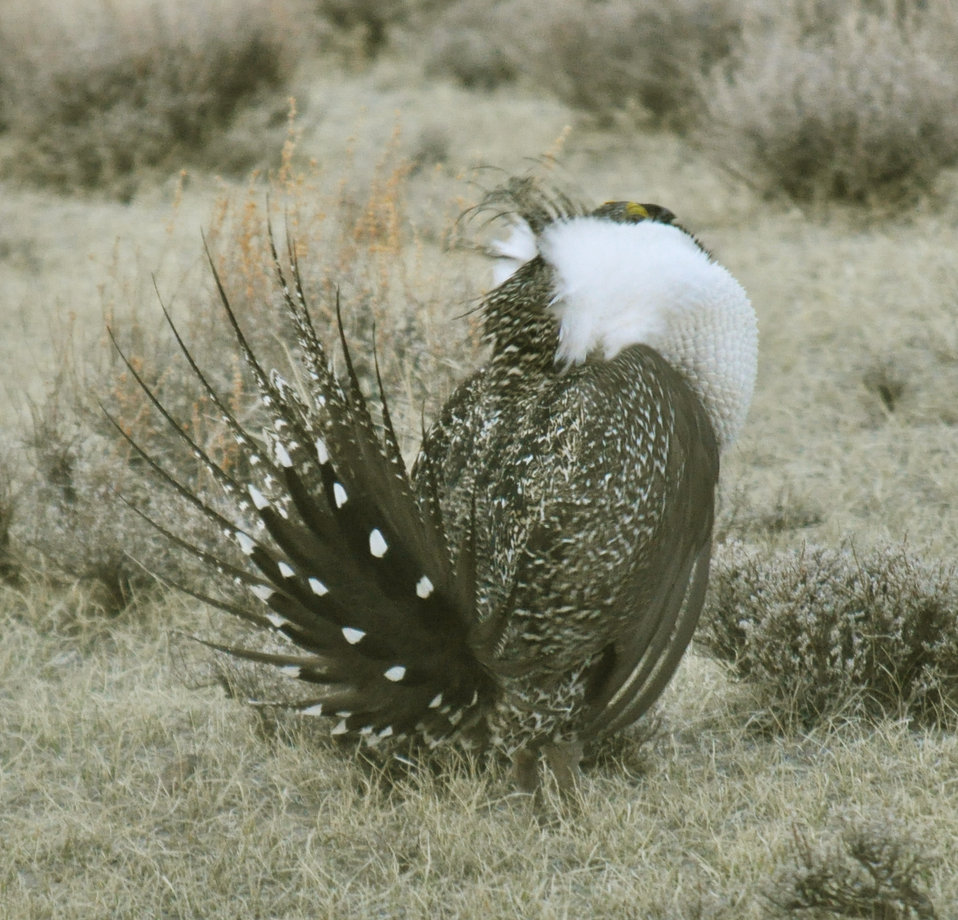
Male greater sage-grouse struts to attract females at a lek (breeding or dancing ground) near Bodie, California in April.